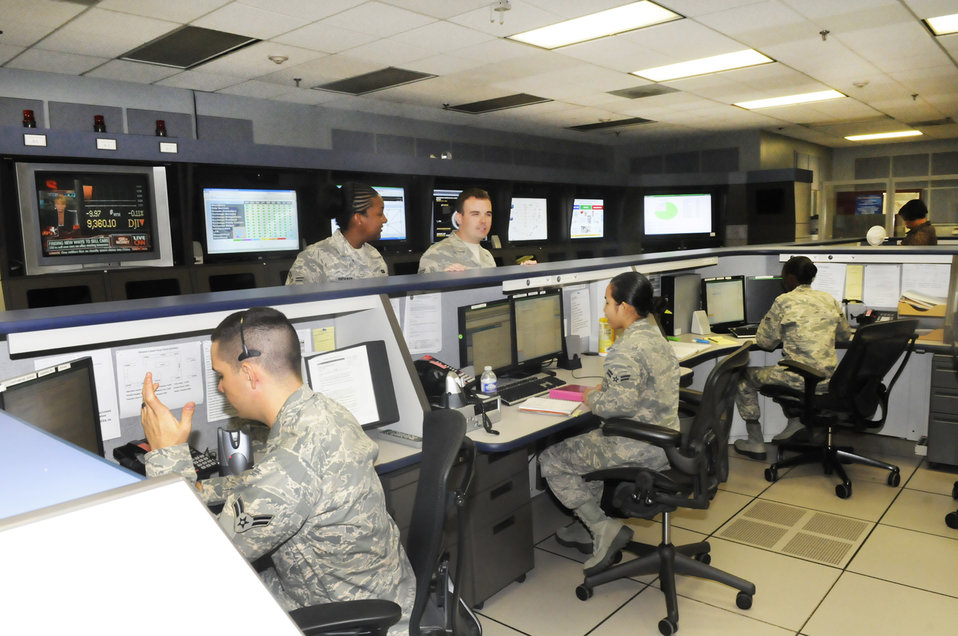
New communications directorate

Airmen handle numerous queries in the 78th Communications Squadron help desk at Robins Air Force Base, Ga. Recently, the 78th CS and the Information Technology Directorate there consolidated into the 78th Communications Directorate.